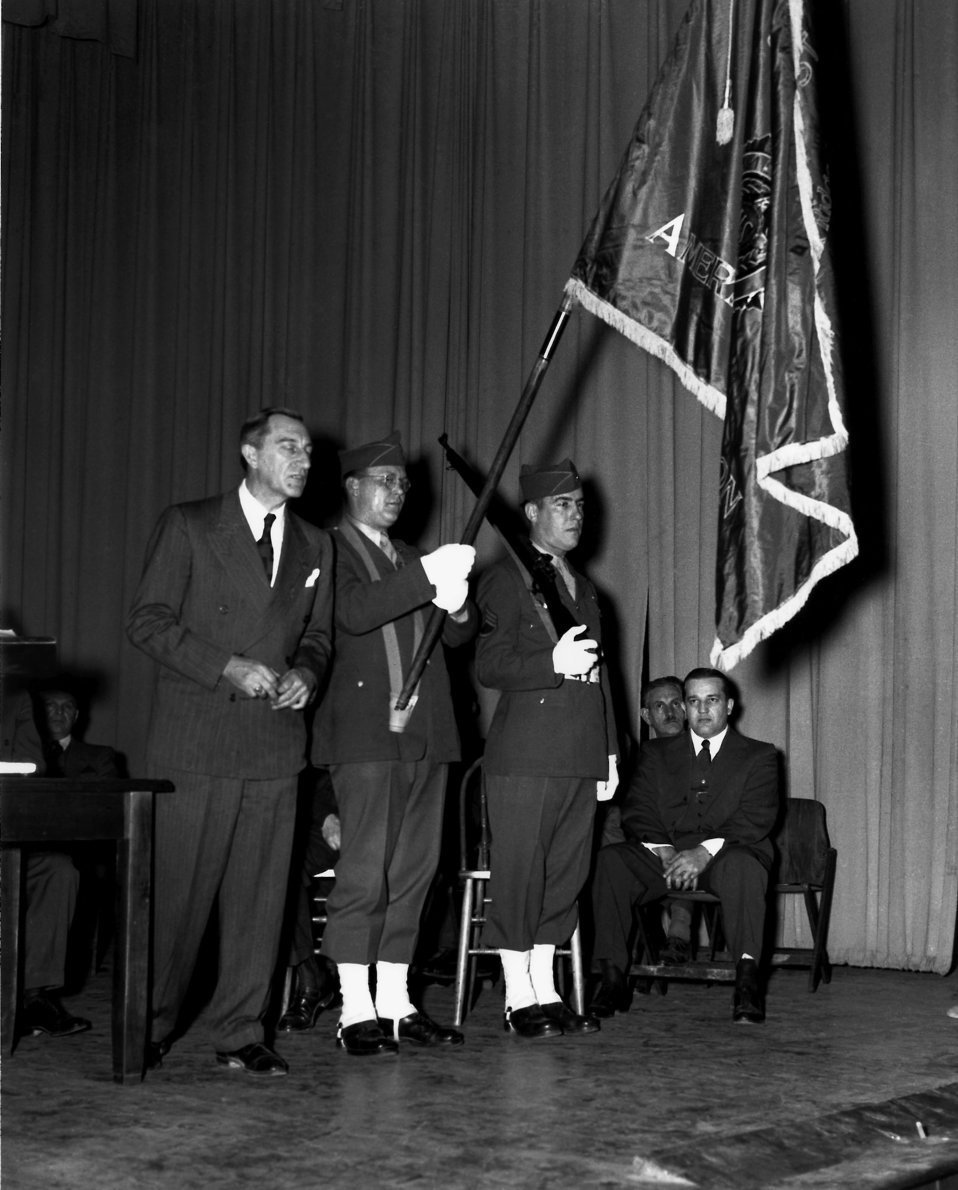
American Legion Color Presentation

pro 276-3 DOE photo Ed Westcott 1/28/1945
Oak Ridge Tennessee